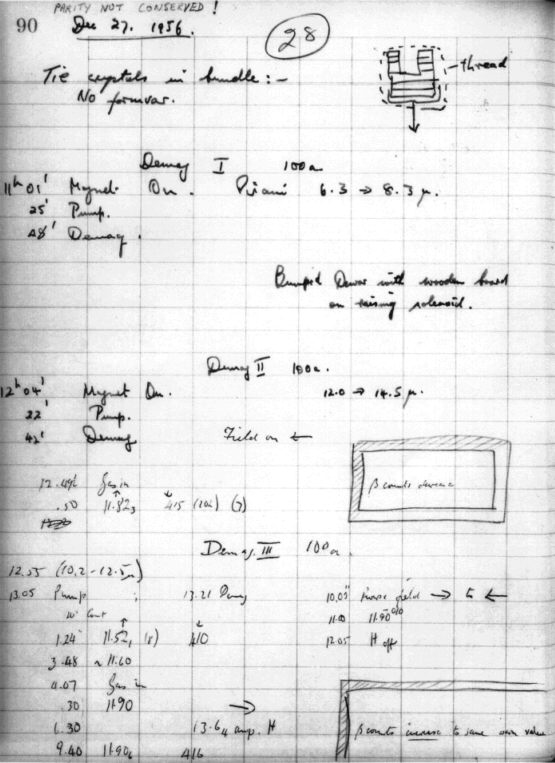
Ernest Ambler's Notebook

Page 90 of Ernest Ambler's laboratory notebook recording the historic parity conservation experiment on December 27, 1956.